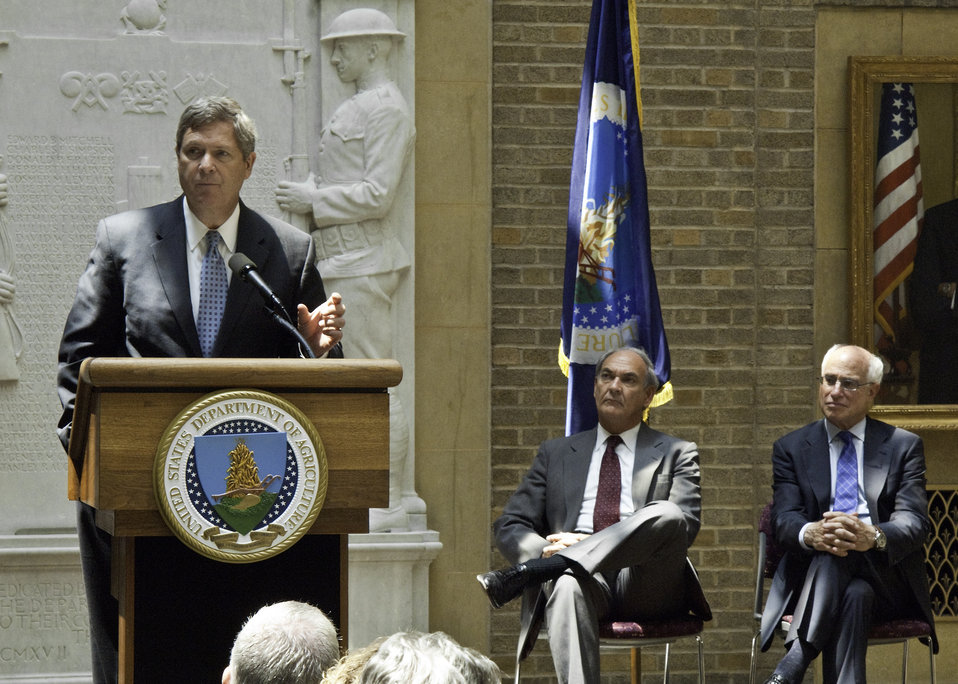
Agriculture Secretary Tom Vilsack addresses the audience at the United States Department of Agriculture and American Recreation Coalition presentation of the 2010 Legends awards. Right of Secretary Vilsck are Derrick Crandall, American Recreation Coalition and , Under Secretary, Natural Resources and Environment Harris Sherman. The award program was held during Great Outdoors Week on the patio of the Department of Agriculture in Washington, DC, Thursday, June 10, 2010. USDA Photo 10di1398-20.